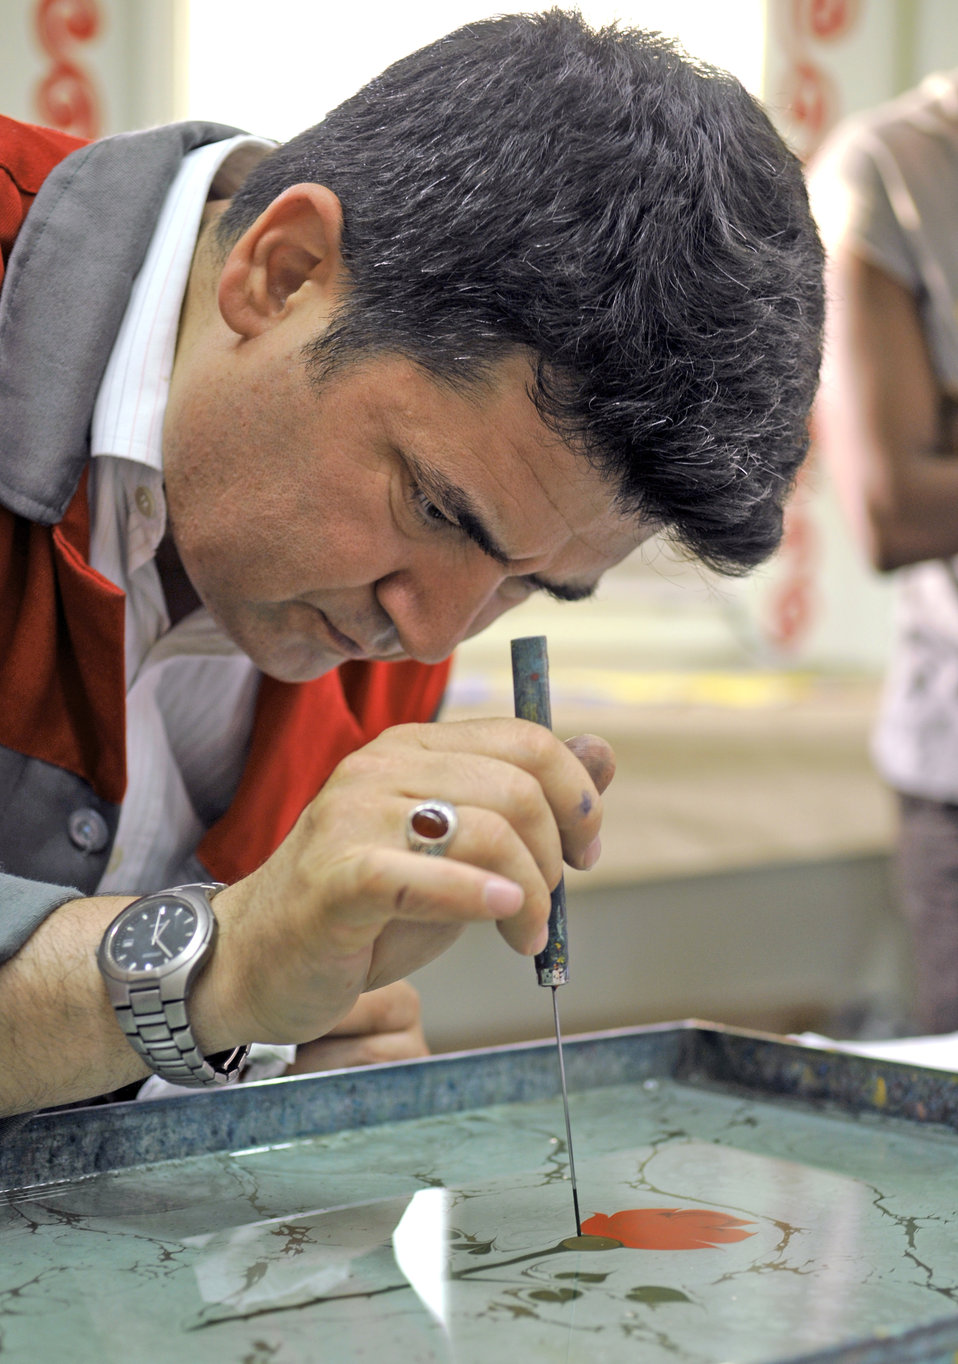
Learning Turkish art

Mesut Dikel, an Ebru art instructor, demonstrates how to create a flora design during a class June 24 at the Arts and Crafts Center at Incirlik Air Base, Turkey. Mr. Dikel has been creating Ebru art, a unique Turkish art form, for nearly 24 years.